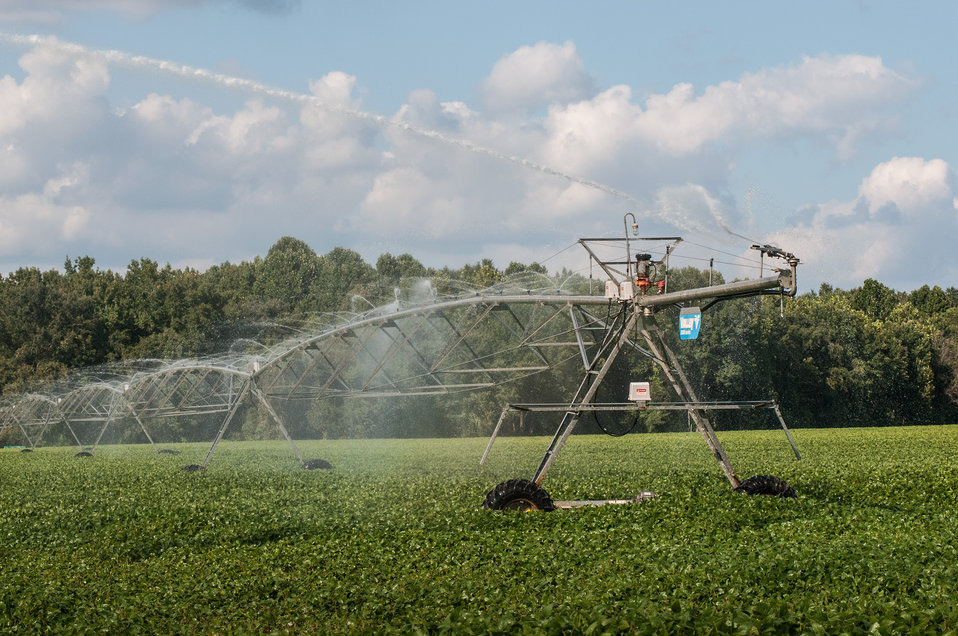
Pivot irrigation with rotating and end gun style pivot sprinkler in Hanover, Virginia, on Friday, Sept. 20, 2013.